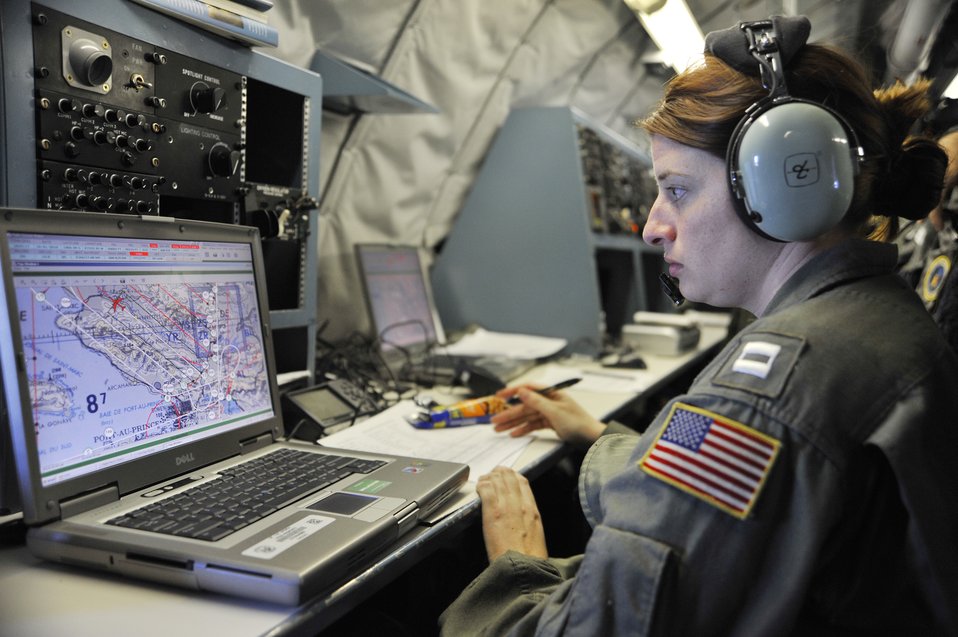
OC-135 crews assist from 15,000 feet

Navy Lt. Bethany Baker monitors the location of the OC-135B Open Skies aircraft over Haiti using the Global Positioning System on a laptop Jan. 16, 2010. Normally used to observe military activities for the Open Skies Treaty, the OC-135B crew flew a observation mission over Haiti in support of the relief efforts after the country was rocked by a 7.0-earthquake. Lieutenant Baker is the deputy mission commander assigned to the Defense Threat Reduction Agency at Fort Belvoir, Va.